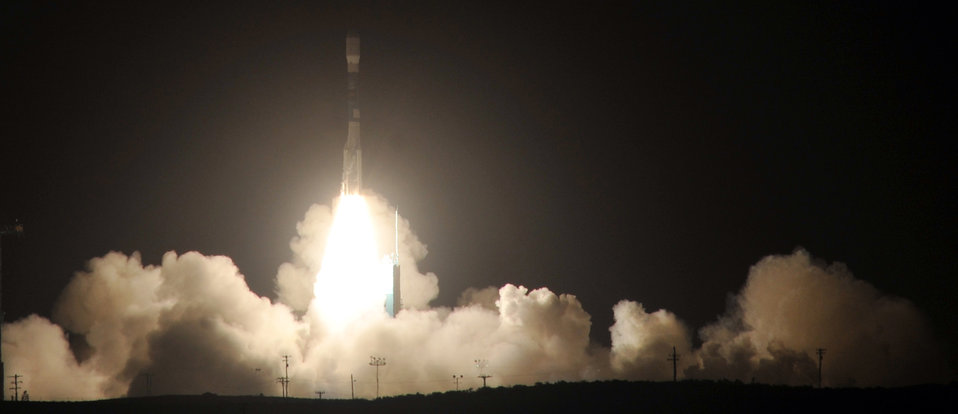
NASA WISE Delta II launch successful

Vandenberg Airmen launched a Delta II rocket Dec. 14, 2009, from Space Launch Complex 2 at Vandenberg Air Force Base, Calif. The rocket carried NASA's Wide-field Infrared Survey Explorer satellite.